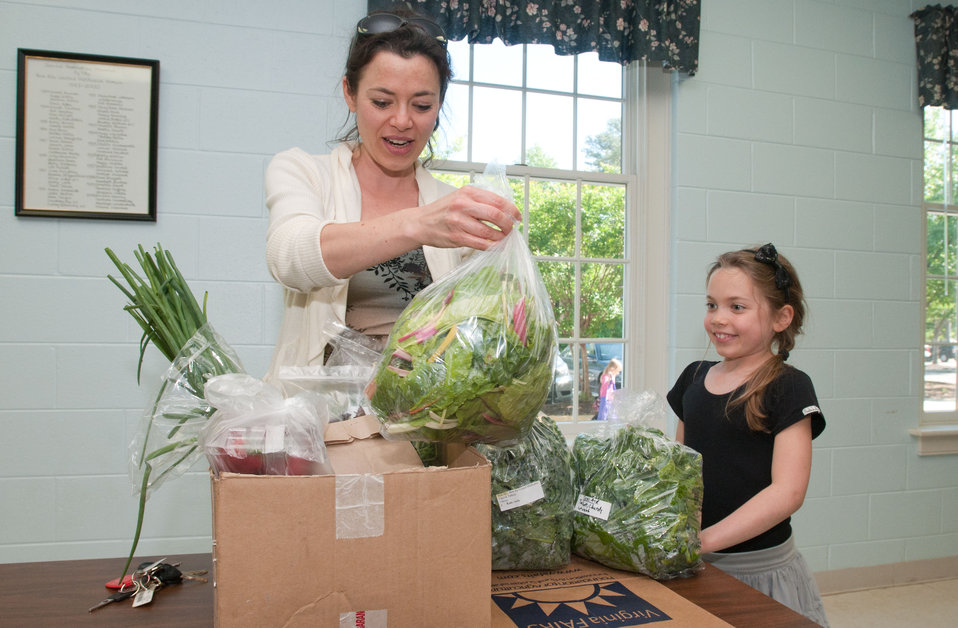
Christy (left) and Lilah Talbott of Richmond, VA came to the Fall Line Farms pick-up point at Bon Air United Methodist Church on Thursday, May 5, 2011. This is one of several pick-up points in the Richmond, VA area. This local food hub offers a wide variety of household food staples and specialty items. The difference from traditional co-ops is that members can pick their customized orders from an ever changing inventory of fruits, vegetables, meats, soaps, eggs, cheeses, flowers, honey, pastas, sauces, syrups, baked goods, mushrooms, flour and grains. Suppliers post what they have on a Lulus Local Food online listing and customers can make their selection Every Thursday suppliers deliver orders to, one of several pick-up points, designated by the customers in or around the Richmond area.